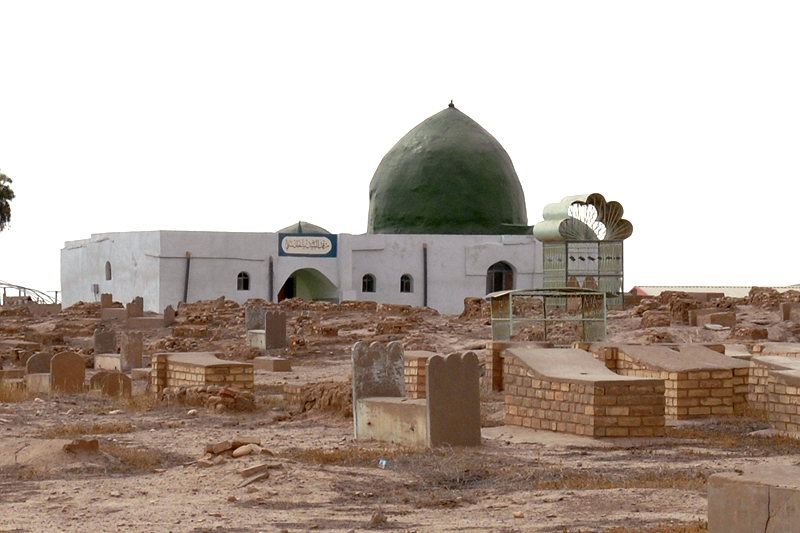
Coalition team restores Iraqi shrine

The newly restored Sultan Saqi Shrine sits at the far end of an on-base cemetery. A coalition team collaborated to restore the shrine prior to a May 27 visit by local families of buried relatives, and Iraqi civic and religious leaders. The shrine and cemetery grounds are believed to be more than 400 years old.